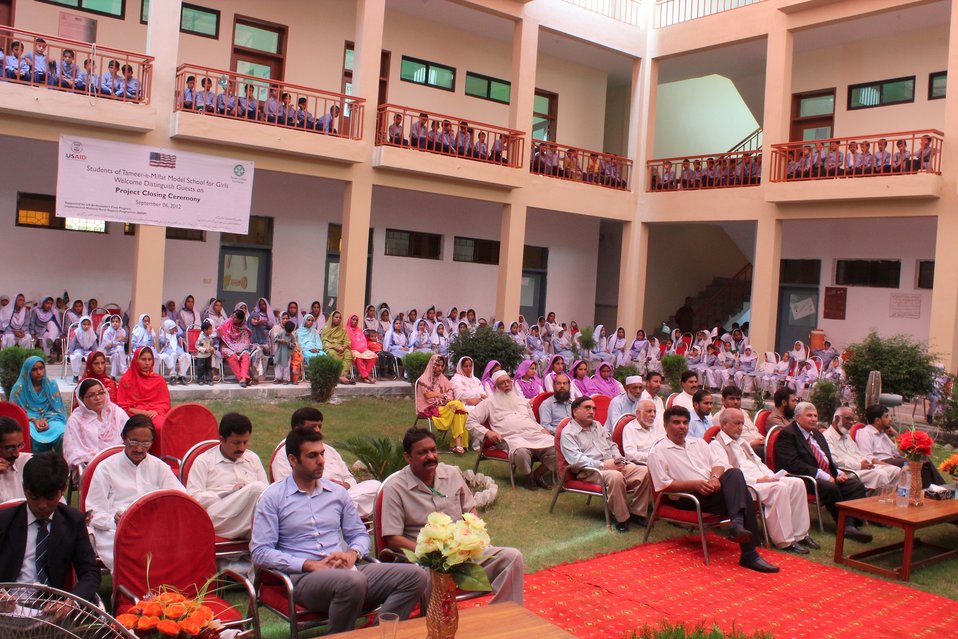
The attendees at the event

Sept 06, 2012 : Construction (first and second floor) of Tameer-e-Millat Model School for Girls (TMMSG) in village Latwal, of Tehsil Fateh Jhang has been completed and on Sept 06, 2012 Project closing and School opening ceremony was held in which students, teachers, parents and community leaders participated.